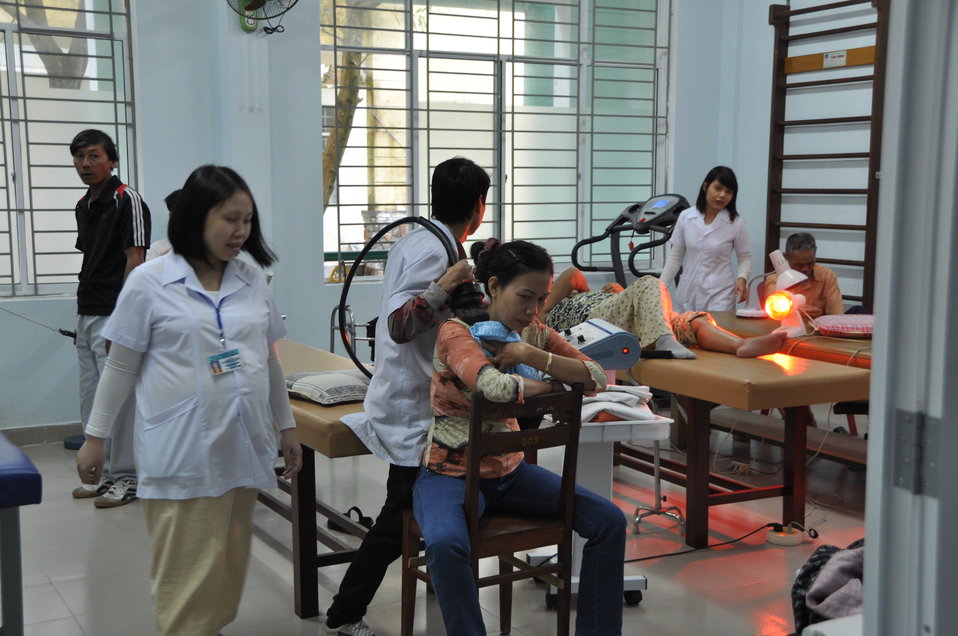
USAID support to Thanh Khe District Hospital

USAID-supported equipment and training help the staff at Thanh Khe District Hospital to meet the physical therapy needs of the disabled population of Danang.